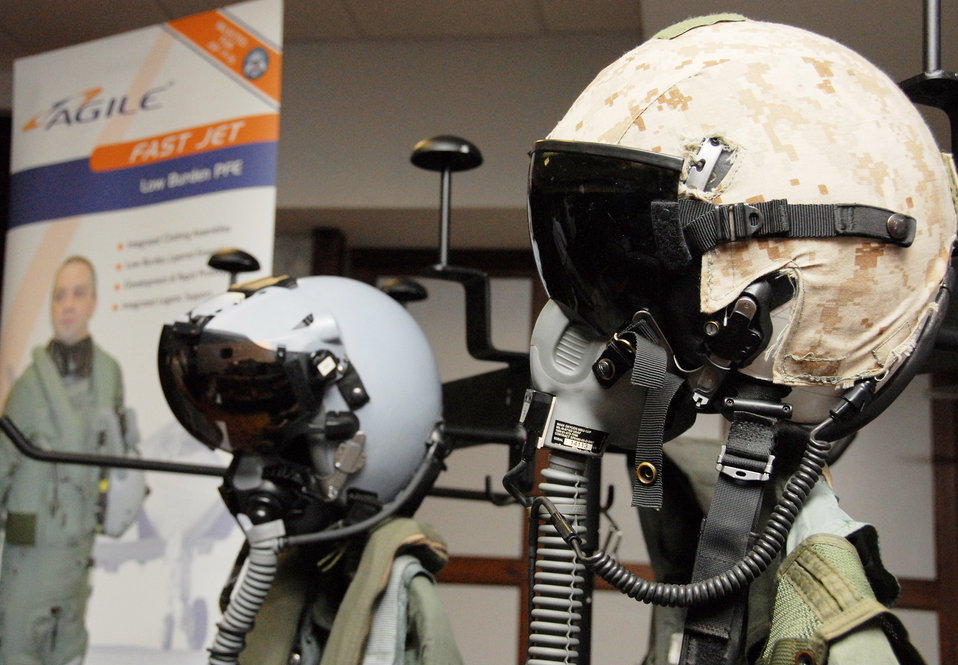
F-35 pilots 'measure' up, move closer to training

Legacy flight suits were displayed as Air Force, Navy and Marine pilots were fitted for the first F-35 Lightning II joint strike fighter equipment Feb. 25, 2010, at Eglin Air Force Base,